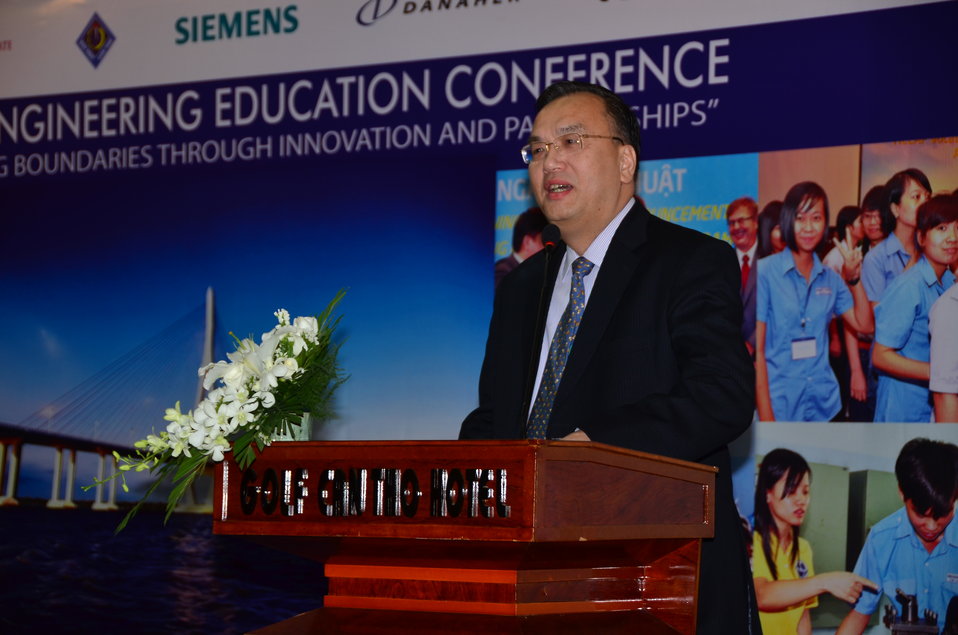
U.S. Consul General Le An speaks at opening of HEEAP conference

March 19, 2013, Can Tho.